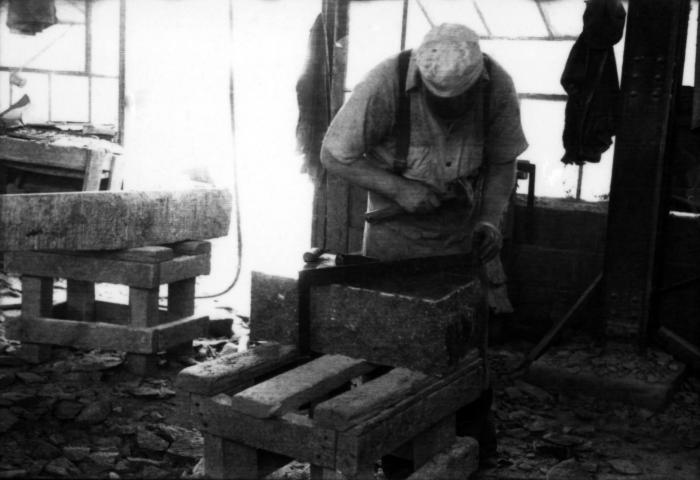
This October 1947 photograph was provided by the Center for Disease Control's (CDC), National Institute for Occupational Safety and Health (NIOSH). The image depicted a stonecutter in the process of carving a gravestone with a hammer and chisel inside a Kansas workshop. From this image, it cannot be determined whether or not the man was wearing a protective filtered breathing apparatus. Workers can be exposed to potential respiratory health hazards, as well as other physical injuries when working in stone cutting and quarrying industries.